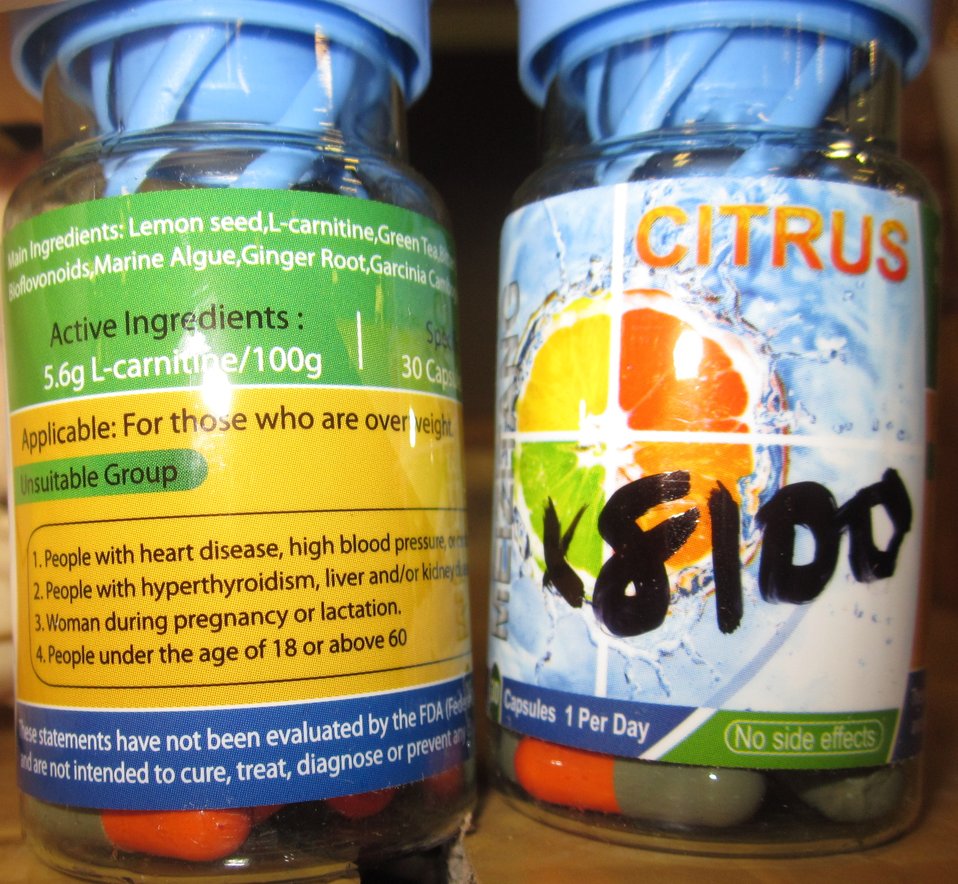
Meizitang Citrus

December 19, 2013 - The FDA is advising consumers not to purchase or use 'Meizitang Citrus,' a product promoted and sold for weight loss. The product was found to contain undeclared sibutramine. For more information, go to www.fda.gov/Drugs/ResourcesForYou/Consumers/BuyingUsingMe...

And read this Consumer Update: Beware of Fraudulent ‘Dietary Supplements’